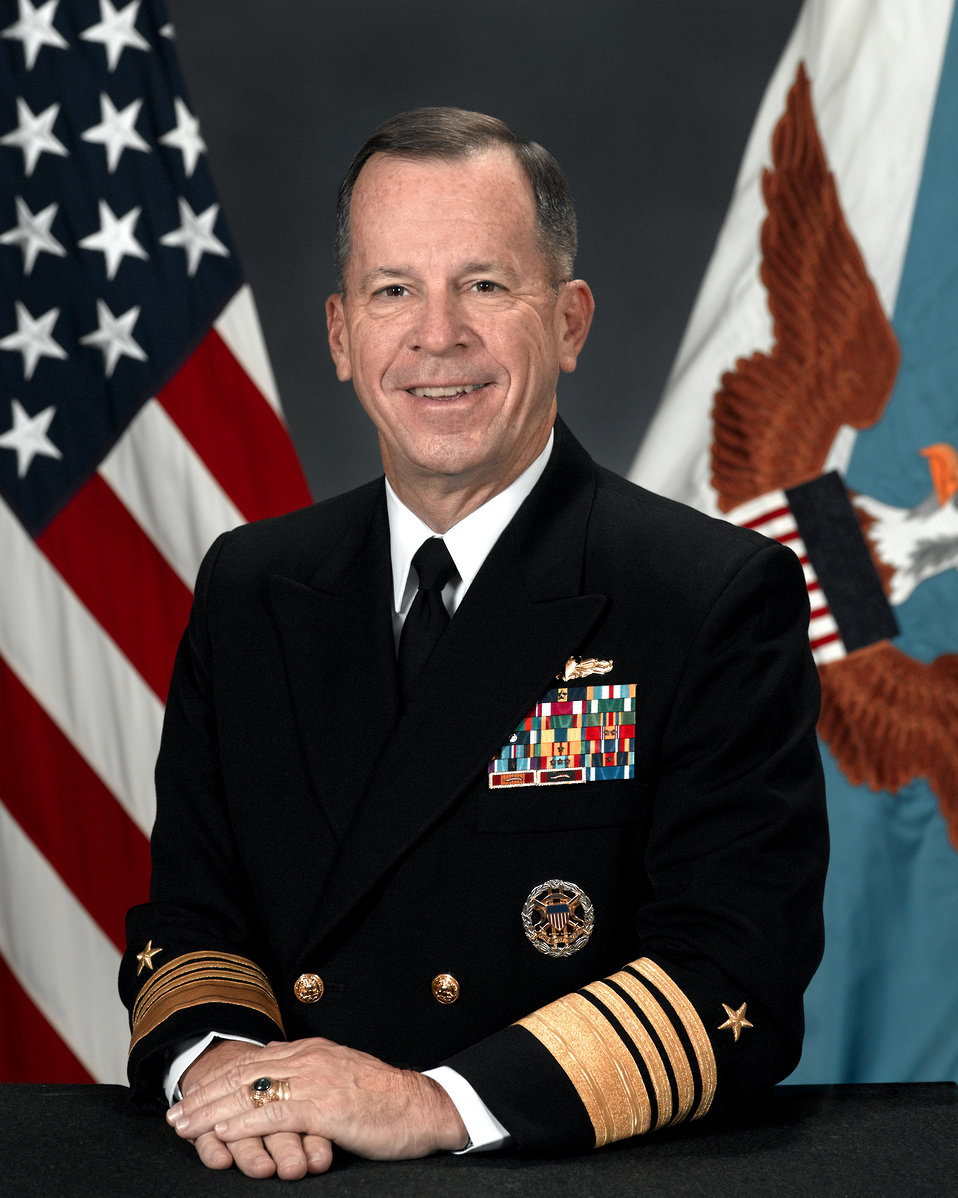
Adm. Mike Mullen, chairman of the Joint Chiefs of Staff, will be featured on the Pentagon Channel's Virtual Town Hall on Sept. 14, 2010.